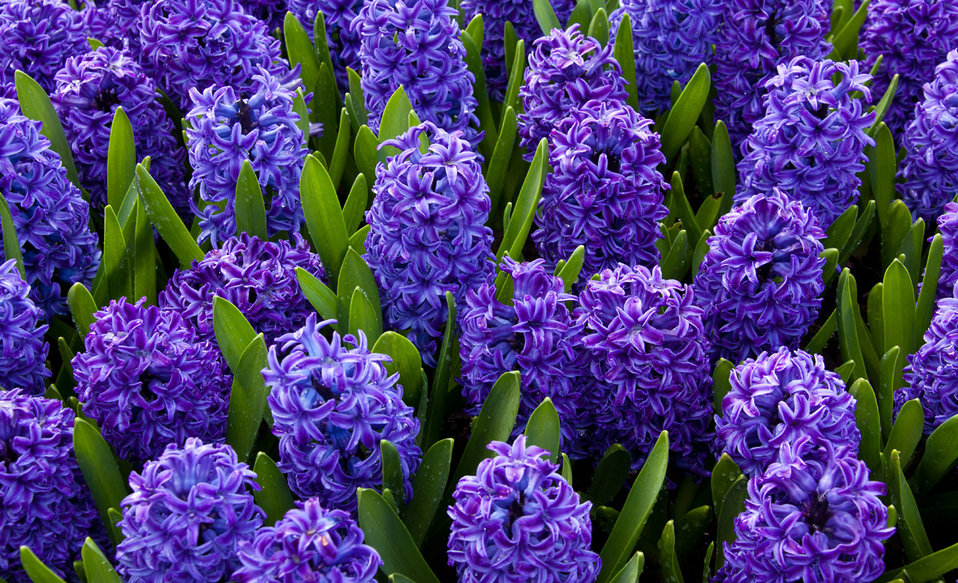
Blue hyacinths

Blue hyacinth background photo.